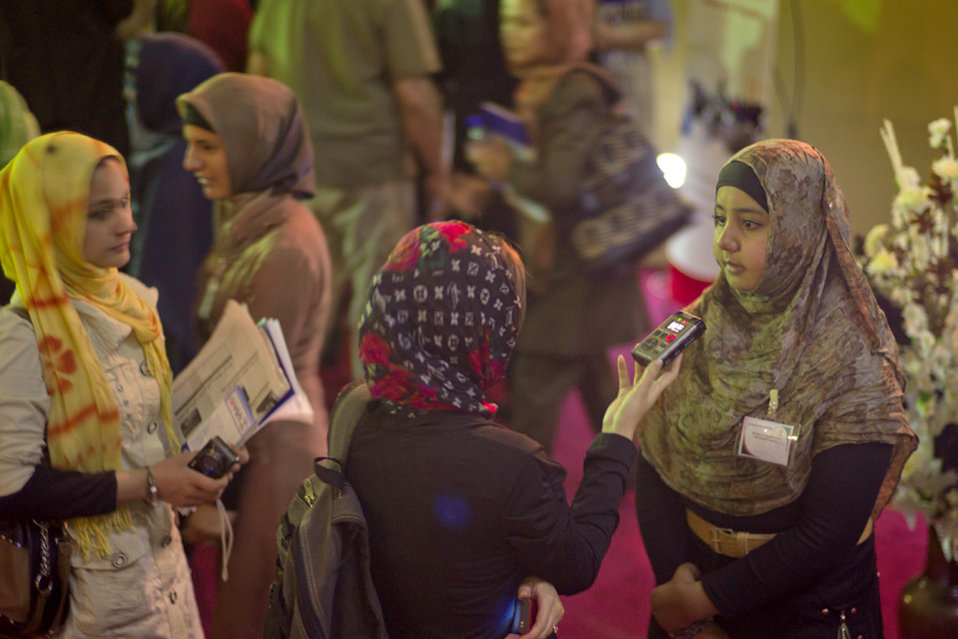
Intern being interviewed